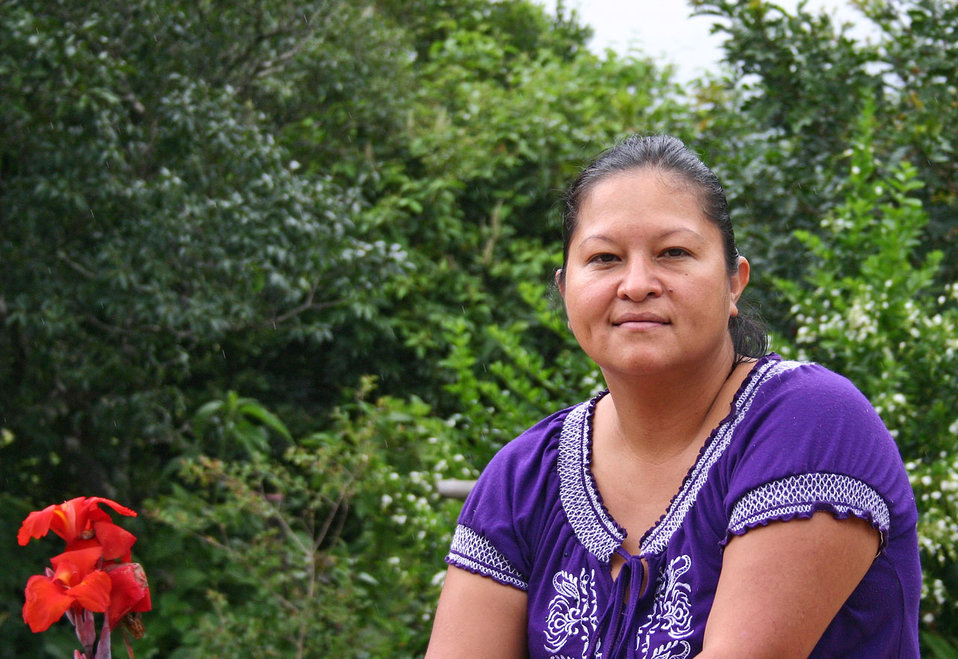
Woman with red flower

Panamanian woman seated on patio.